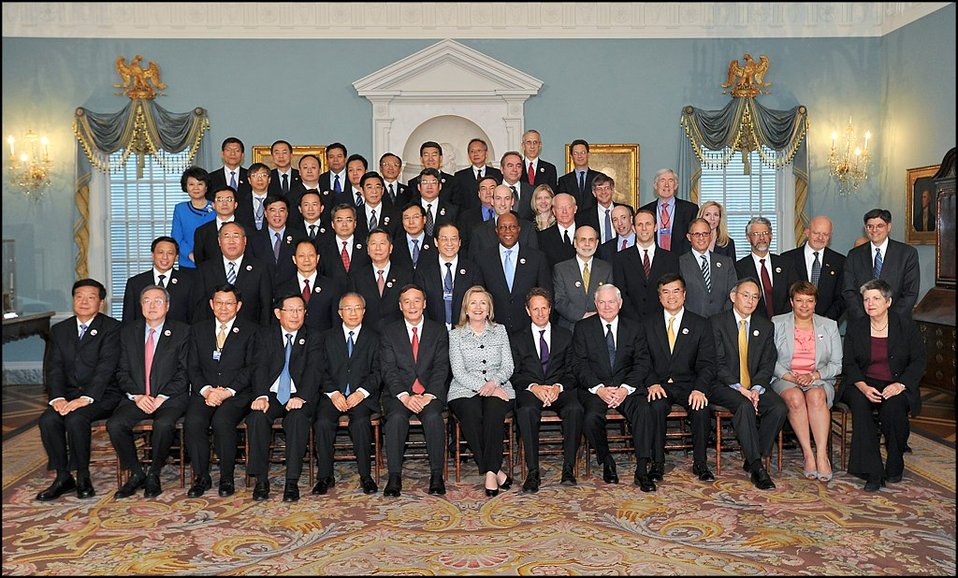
U.S.-China Strategic and Economic Dialogue

'Family Photo' from the third U.S.-China Strategic and Economic Dialogue held in Washington, D.C.